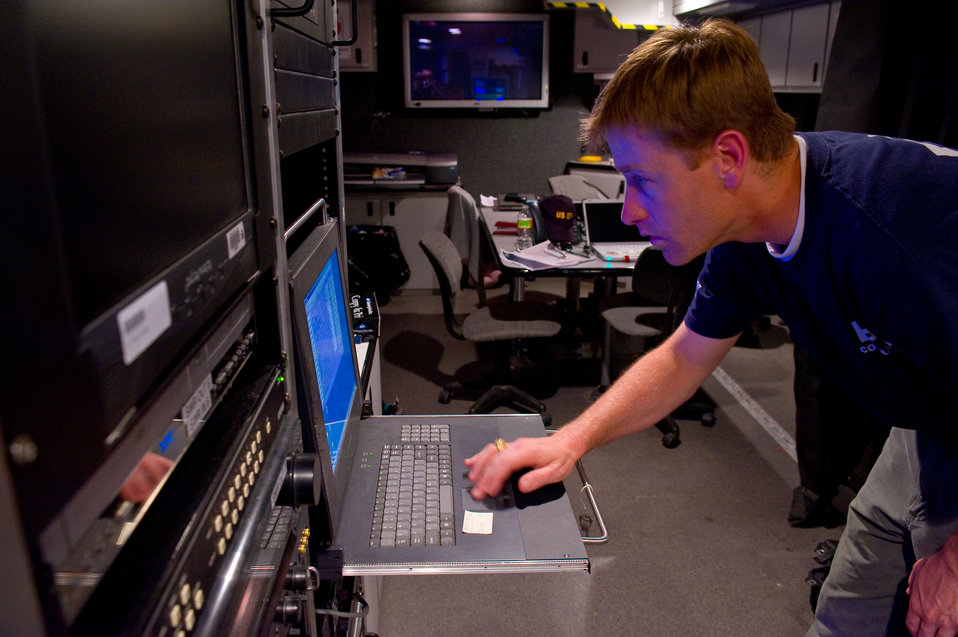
Reviewing data into the night.

May 13, 2010. Ben Latham, EPA contractor, reviews and logs data from the day's sampling activities in the Mobile Command Post.